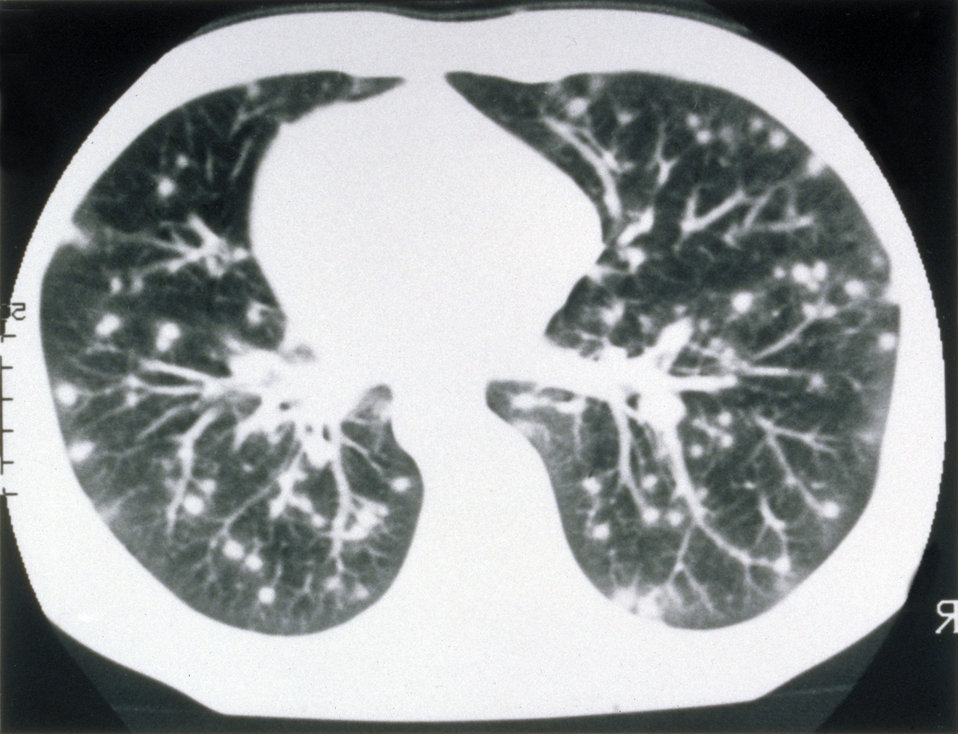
Computed tomography scan showing single pulmonary nodule of histoplasmosis. Coin lesion.